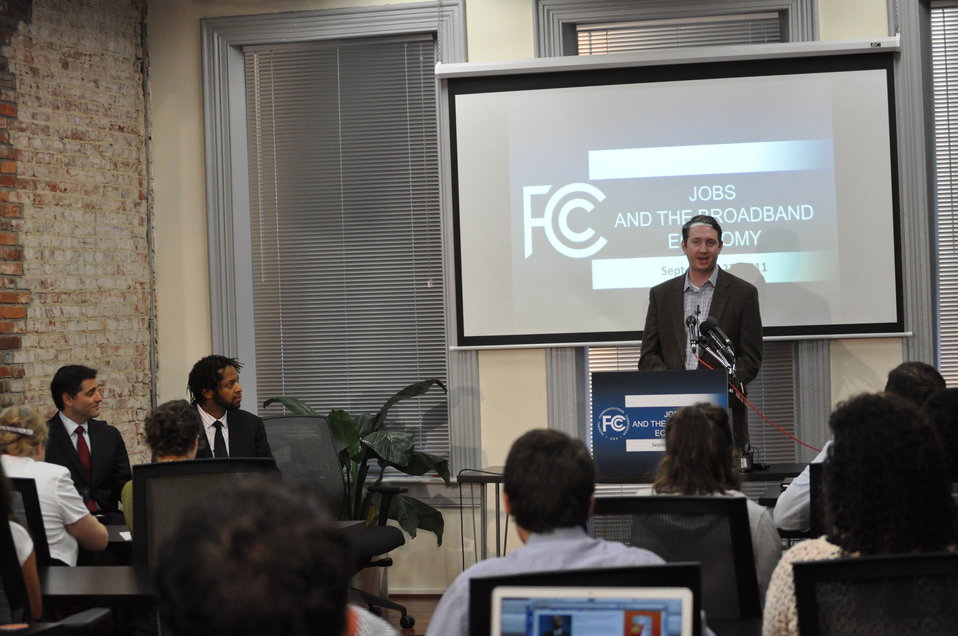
Jobs and the Broadband Economy

Tim O’Shaughnessy , LivingSocial CEO and Co-Founder